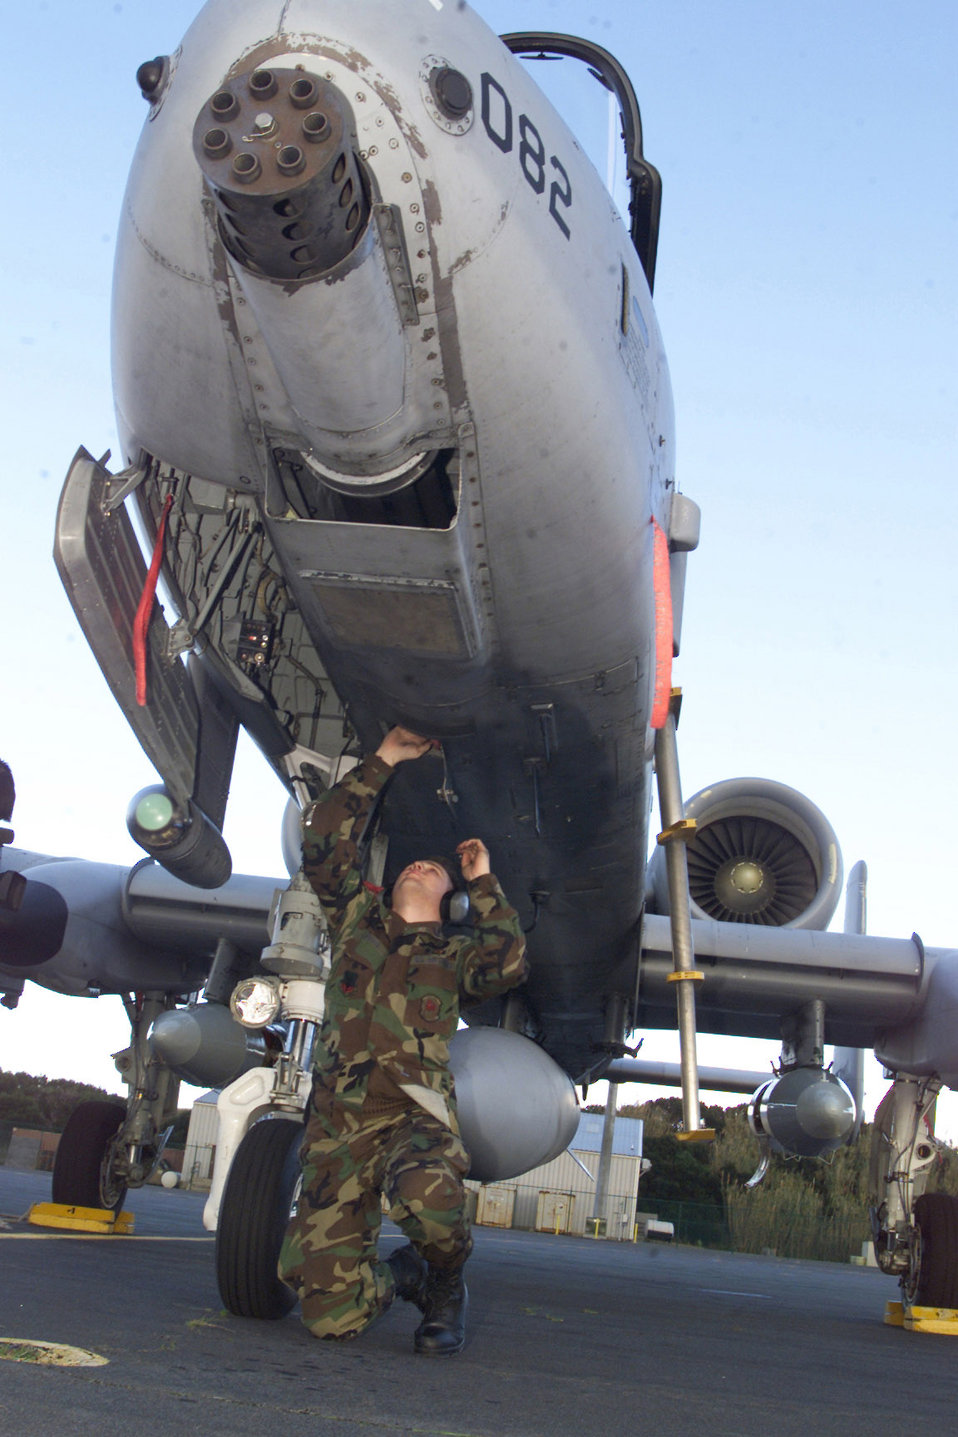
Willow Grove Thunderbolt II

1990's -- OPERATION SOUTHERN WATCH -- Staff Sgt. John Deyoung, an aircraft mechanic from the 65th Operations Support Squadron at Lajes Field, Azores, Portugal, completes a post-flight inspection of an A-10A Thunderbolt II aircraft in support of Operation Southern Watch. The A-10 is from the Air National Guard's 111th Fighter Wing at Willow Grove Air Reserve Station, Penn.